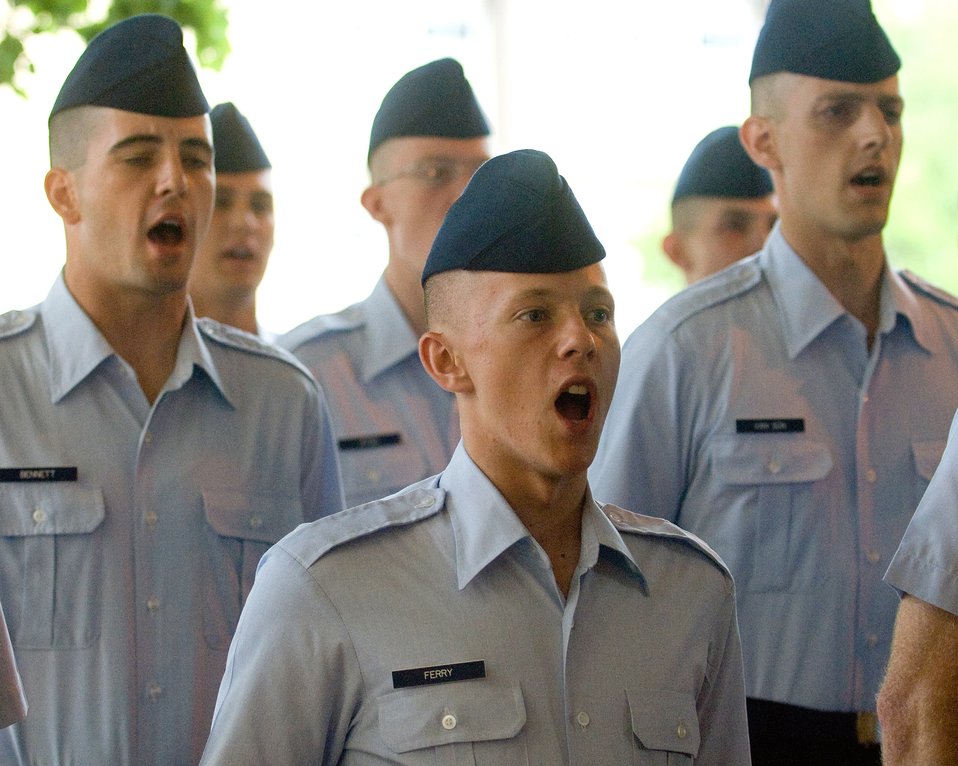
SECDEF visits Airmen, tour BMT facilities

Basic training graduates recite the Airman's Creed during a coin ceremony at Lackland Air Force Base, Texas, July 24.